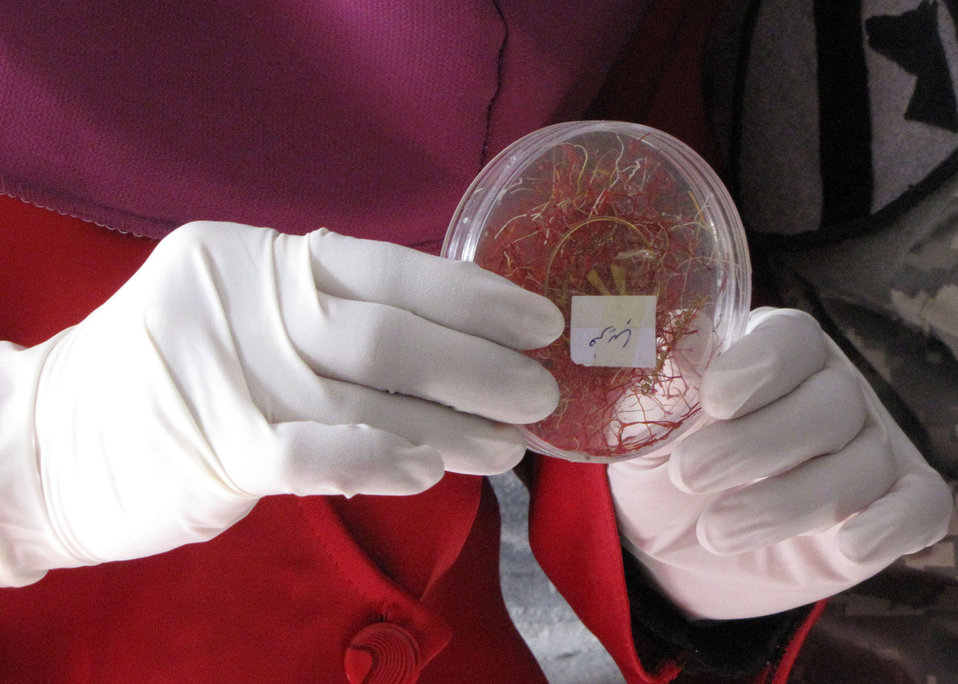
Visiting Afghan women

An Afghan woman from the Panjshir Valley holds a plastic container of saffron as an example of how it should be sorted. Saffron, an herb commonly used in cooking, recently has been introduced to the Afghan countryside. Women grow it, sort it and then sell it to companies as a means to increase their livelihood.